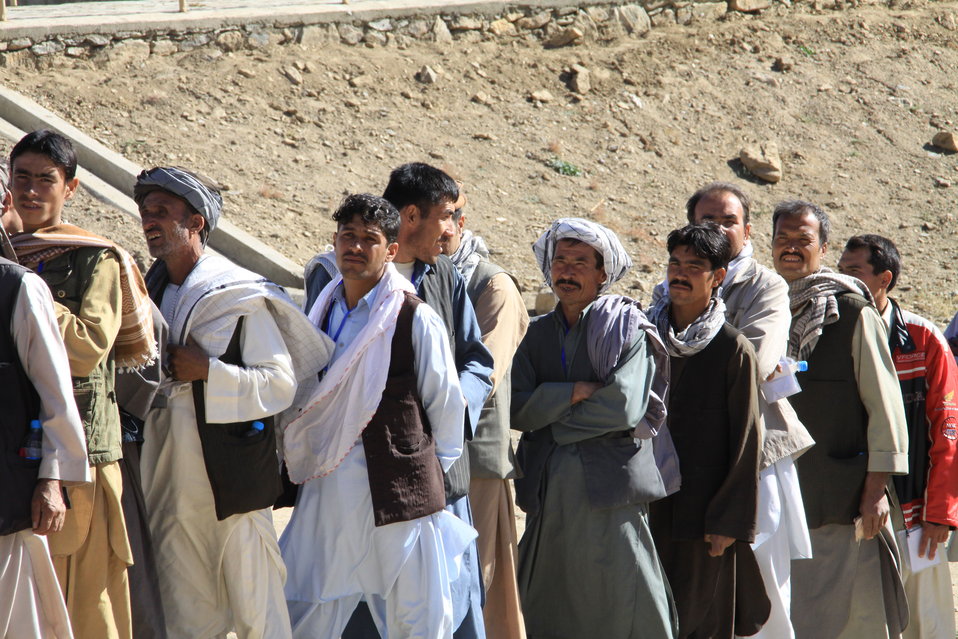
AVIPA Plus Wheat Seed Distribution 101005

US Ambassador Karl Eikenberry and USAID Acting Mission Director Kevin Brownawell joined the Minister of Agriculture, Irrigation and Livestock, H.E. Minister Mohammed Rahimi in signing a Memorandum of Understanding and distributing vouchers to area farmers for wheat and fertilizer.